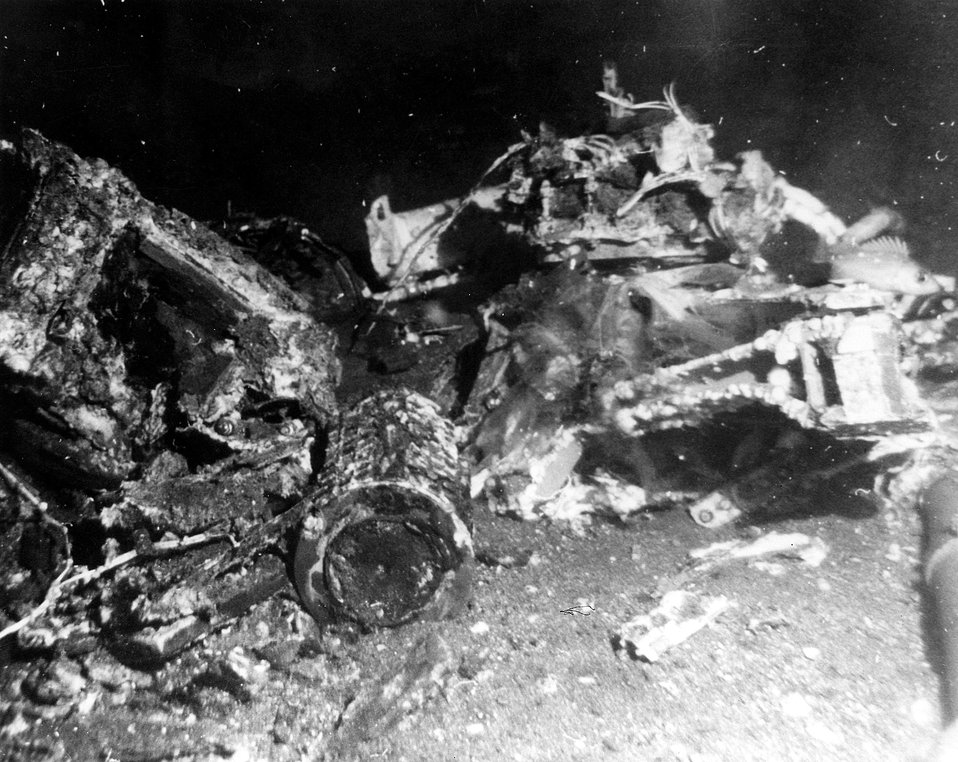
Intact SNAP-19 fuel capsule is shown among debris on Pacific Ocean floor resulting from aborted launch of a Nimbus B weather satellite in 1968.